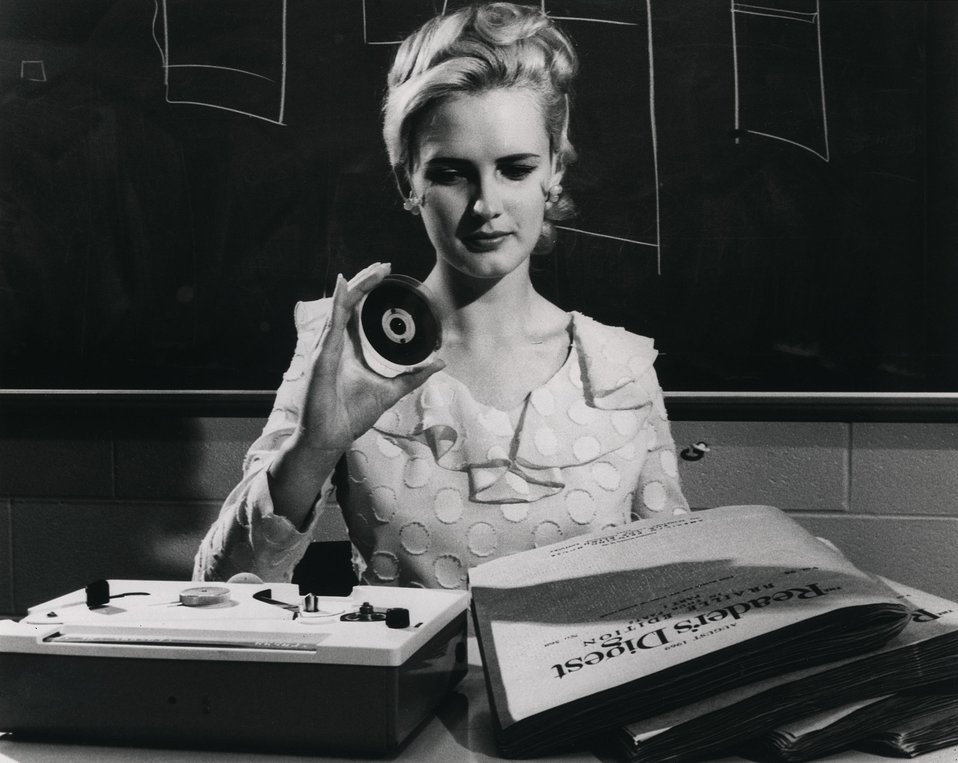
The small roll of 1/4 inch magnetic tape represents an amount of braille information equivalent to three editions of the Readers Digest.
c.1970